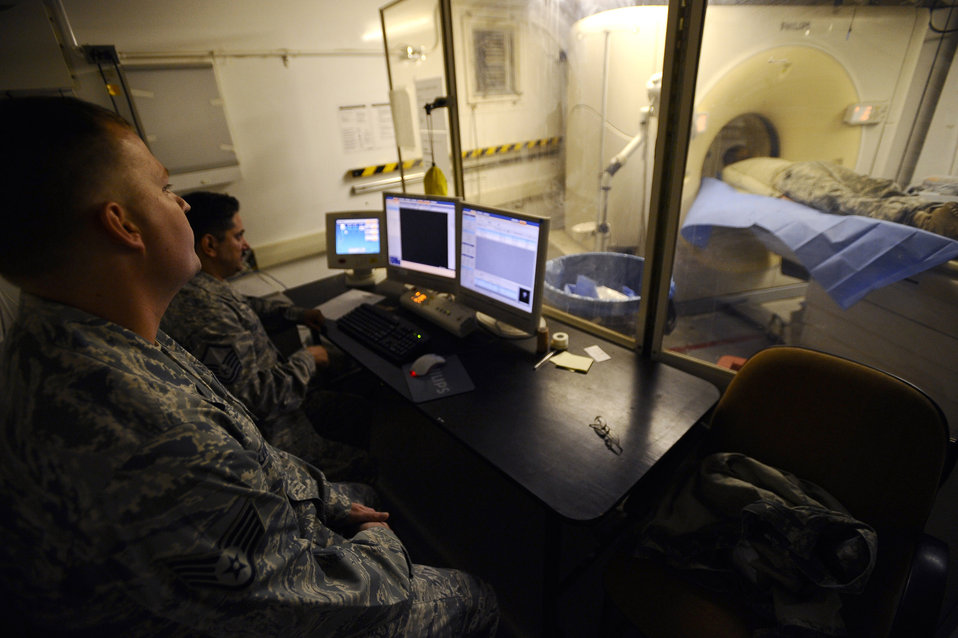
I can see right through you

Staff Sgt. Joshua Livingston and Master Sgt. Oscar Sotomayor watch as a patient goes through a CT scan Nov. 21 at Joint Base Balad, Iraq. The CT scan will aid doctors in diagnosing medical conditions that the patient may have. Sergeant Livingston, a CT technologist with the 332nd Expeditionary Medical Support Squadron and native of Rapid City, S.D., is deployed from Keesler Air Force Base, Miss. Sergeant Sotomayor, the NCO in charge of diagnostic imaging with the 332nd Expeditionary Medical Support Squadron and a native of San Antonio, is deployed from Langley AFB, Va.